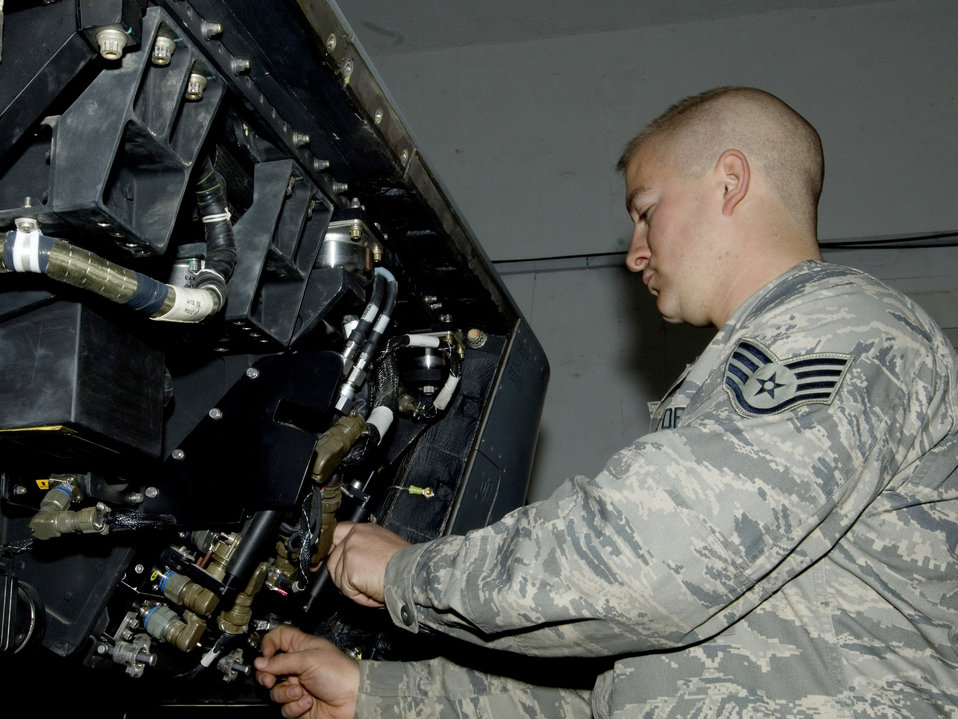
TARS pod brings picture into focus

Staff Sgt. George Suonvieri adjusts the flash drive used for storage aboard a Theater Airborne Reconnaissance System pod mounted on an F-16 Fighting Falcon Dec. 21 at Joint Base Balad, Iraq. Ground commanders use TARS imagery to achieve their tactical objectives. Sergeant Suonvieri is one of four 332nd Expeditionary Aircraft Maintenance Squadron avionics maintainers responsible for the 332nd Expeditionary Fighter Squadron's TARS pods. Sergeant Suonvieri, a native of Duluth, Minn., is deployed from the Minnesota Air National Guard's 148th Fighter Wing.